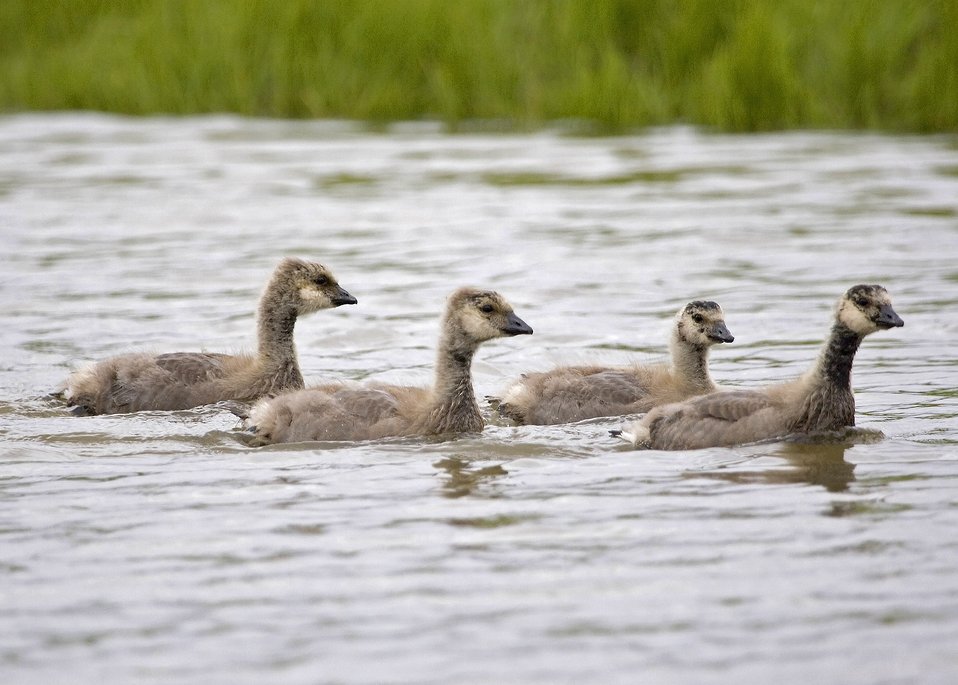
Cackling Canada goose goslings